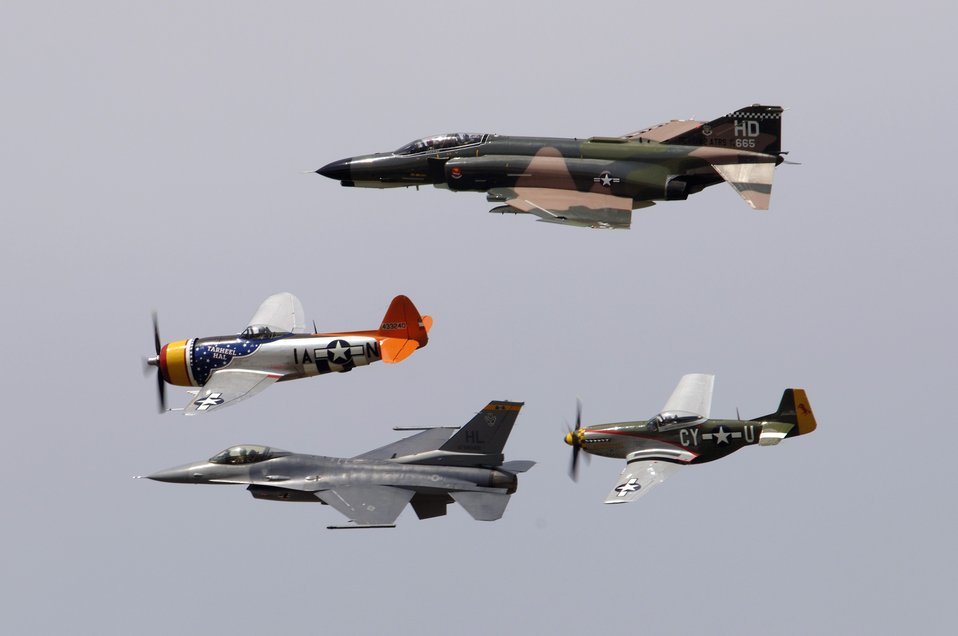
Heritage flight

An F-4 Phantom, P-47 Thunderbolt, F-16 Fighting Falcon and P-51 Mustang fly in a heritage flight formation during the 2006 Defenders of Liberty Airshow at Barksdale Air Force Base, La., on Saturday, May 13, 2006.